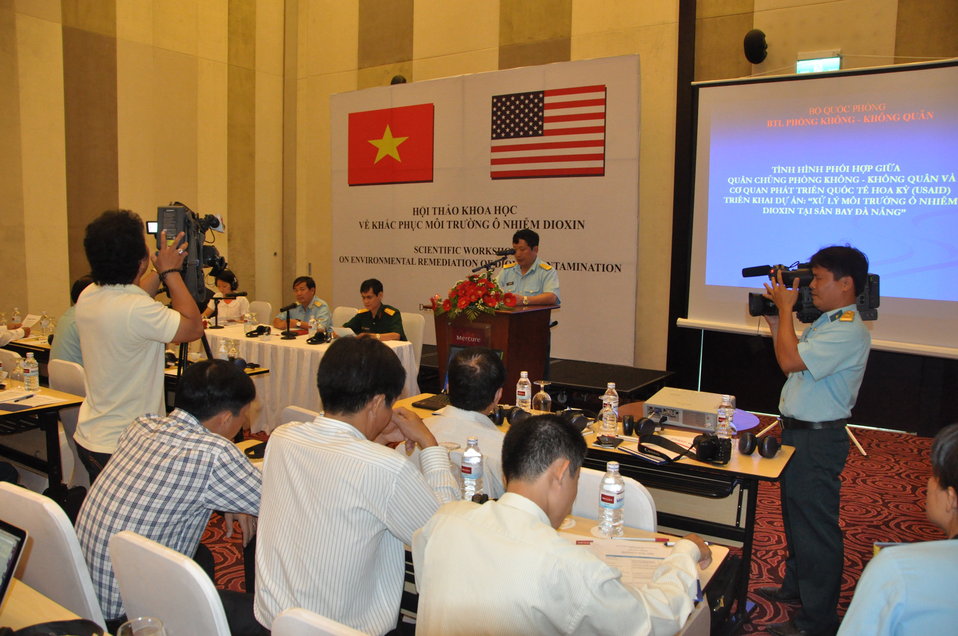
Scientific Workshop on Environmental Remediation of Dioxin Contamination at Danang Airport

August 8, 2012